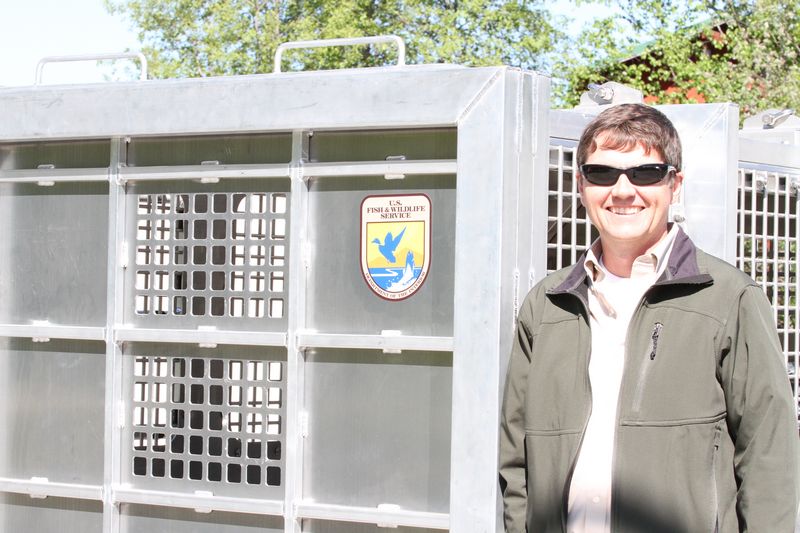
Press Conference on the polar bear holding module. USFWS/Rose Primmer